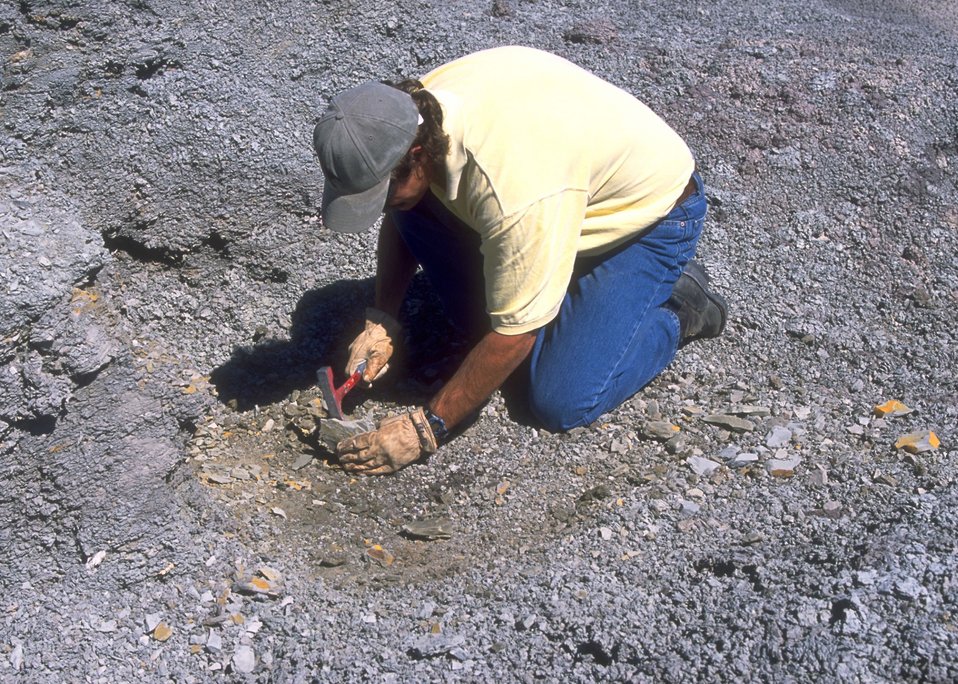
Dave Baker, WFO, examining fossils at the Cedar Ridge Paleo area, Lander Field Office.